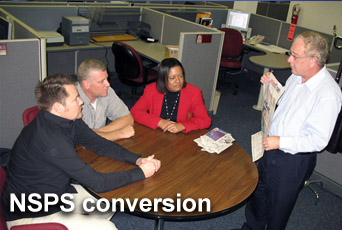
Air Force converts largest group of civilian employees to NSPS

Air Force officials converted the largest group of civilian employees to the National Security Personnel System in its recent spiral. Beginning Jan. 21, approximately 26,000 employees converted, bringing the number of Air Force employees covered by NSPS to approximately 40,000 world-wide.